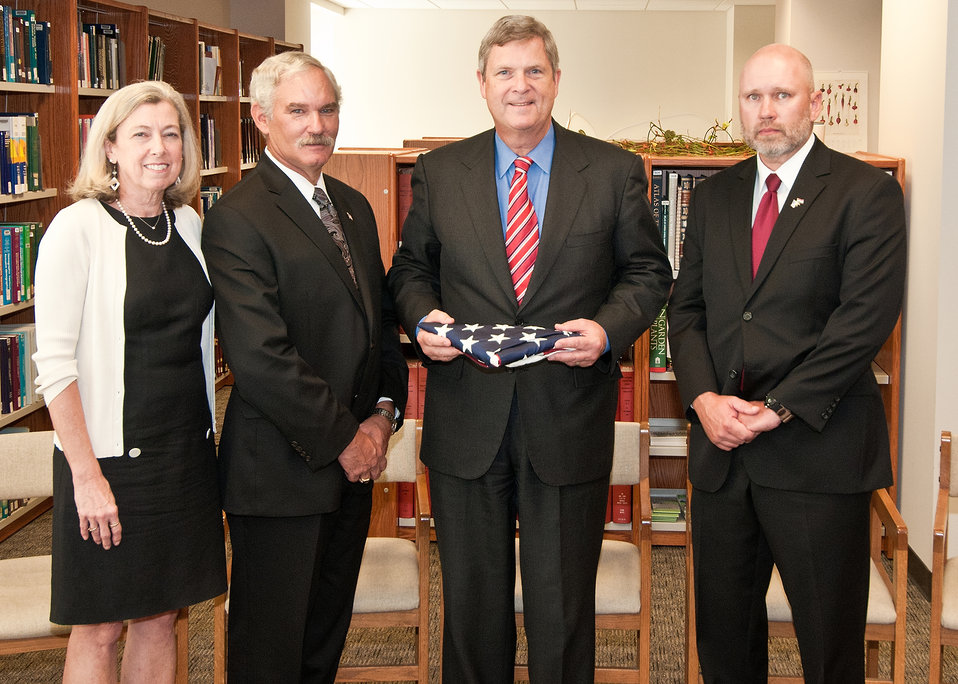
(L to R- Acting Administrator Foreign Agriculture Service Suzanne Heinen, Acting Undersecretary Farm and Foreign Agricultural Services Michael Scuse, Agriculture Secretary Tom Vilsack and Farm Services Agency and Farm Services Agency Senior Agriculture Advisor for the Provincial Reconstruction Team (PRT) in Taji North, Iraq Tim Lowery). Mr. Lowery presents Secretary Vilsack with the American flag flown over the Forward Operating Base Camp Taji, Iraq on Sep. 11, 2009 and on Sep. 11, 2010. The presentation took place at the U. S. Department of Agriculture in Washington, D. C. on Monday, Sep. 12, 2011.